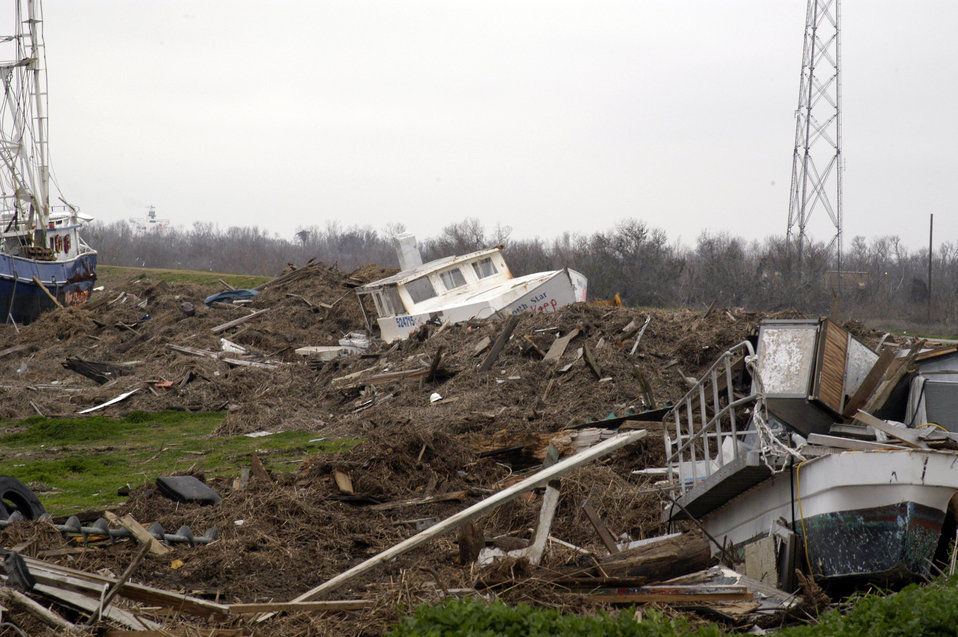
Boats were torn from their moorings and washed up the shore in Plaquemines Parish, LA, by Hurricane Katrina. Katrina made landfall on Monday morning, August 29, 2005 as a Category 3 hurricane with sustained winds of 125 mph with over a 20-foot storm surge. Katrina caused catastrophic damage over 90 thousand square miles across Louisiana with an estimated $75 billion dollars in damage. The total economic impact to the Gulf Coast was estimated at over $150 billion. 80% of New Orleans, LA, was underwater with some areas more than 20 feet deep. Less than a month later southern Louisiana was struck by a second Category 3 hurricane Rita inflicting more damage in the southwestern areas of Louisiana adding an addition $12 billion worth of damage to the already beleaguered state. The U.S. Army Corps of Engineers (USACE) under the auspices of Federal Emergency Management Agency (FEMA) was the lead service in providing assistance to the citizens of Louisiana. The U. S. Department of Agriculture (USDA) supplied emergency food aid, emergency loan assistance to farmers and home owners, and USDA personnel from around the nation volunteered their time and muscle to aid in the recovery operations.